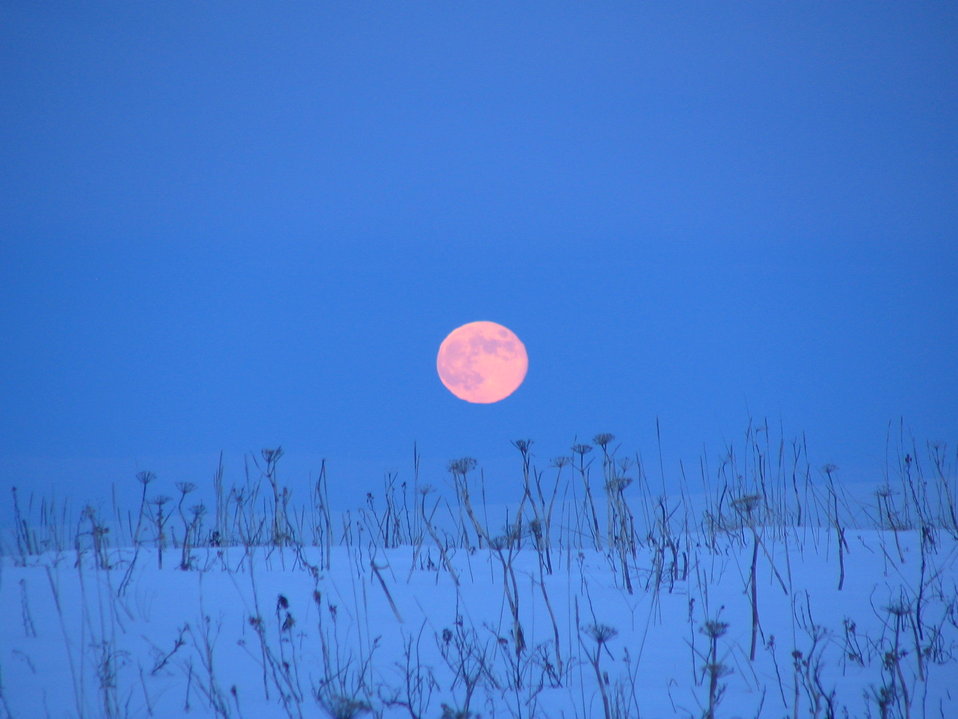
Moonrise at Izembek

Izembek National Wildlife Refuge